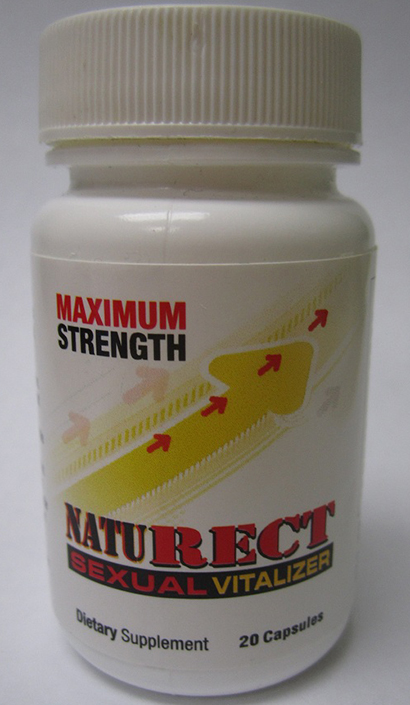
RECALLED – Dietary Supplements

November 19, 2013 – Product Recall – Tendex Issues Voluntary Nationwide Recall of P-Boost, NatuRECT Due to Undeclared Active Ingredients. For additional information, please refer to the company issued press release available on FDA’s web site at www.fda.gov/Safety/Recalls/ucm375815.

And read this Consumer Update: Beware of Fraudulent ‘Dietary Supplements’